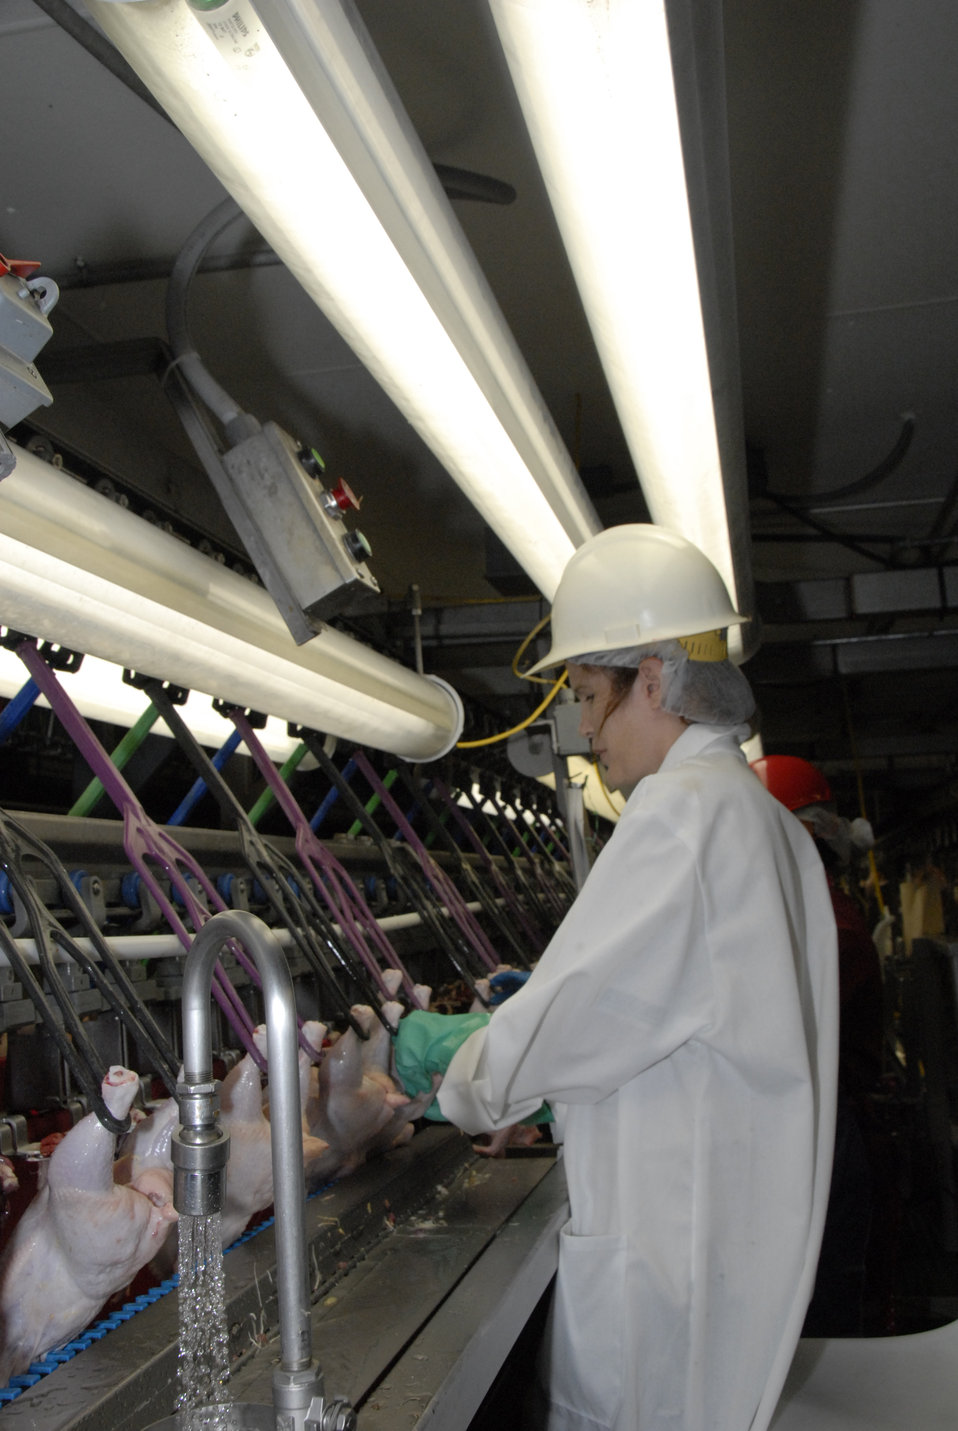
U.S. Department of Agriculture (USDA) Food Safety and Inspection Service (FSIS) inspectors examine chickens at the Holmes poultry slaughterhouse in Nixon, Texas on June 10, 2008.